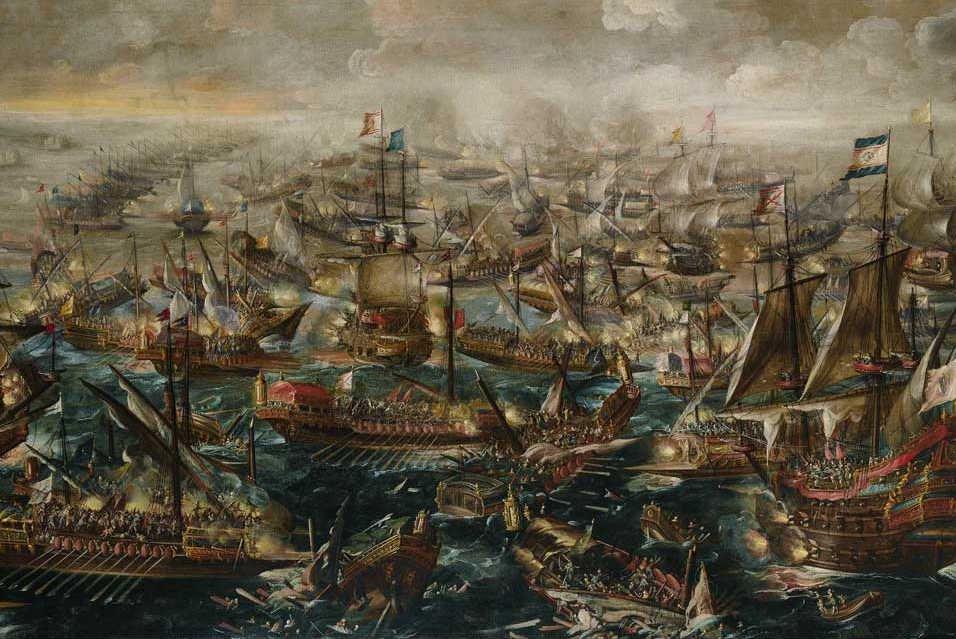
'The Battle of Lepanto', painting by Andries van Eertvelt